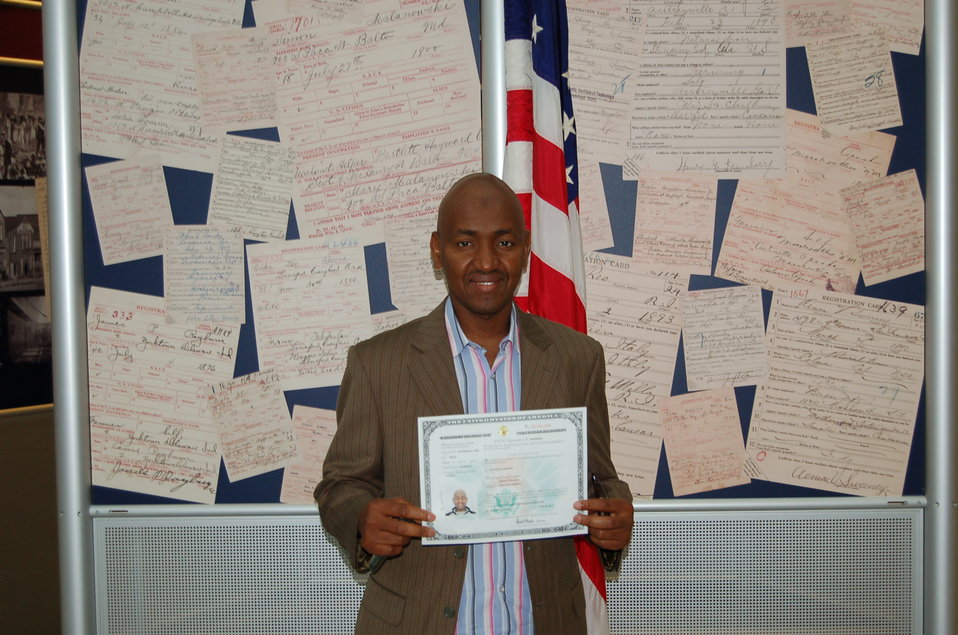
New Citizens